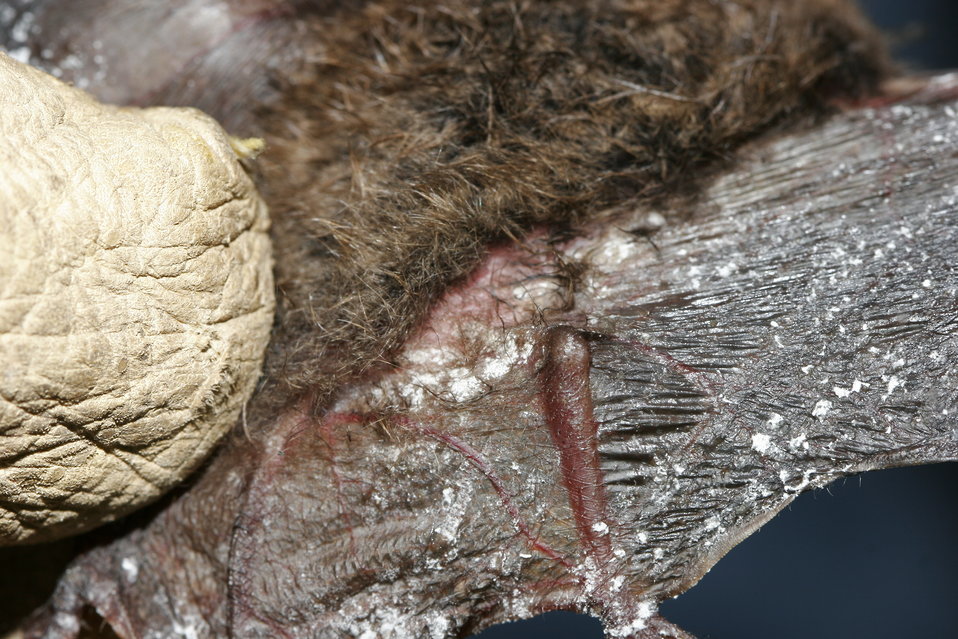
Little brown bat; Fungus on wing and tail membrane, Oct. 2008, New York

Credit: Photo courtesy Ryan von Linden/New York Department of Environmental Conservation

Image size: 3504p (49 in.) W x 2336p (32 in.) H, 72 ppi, 3.9 MB